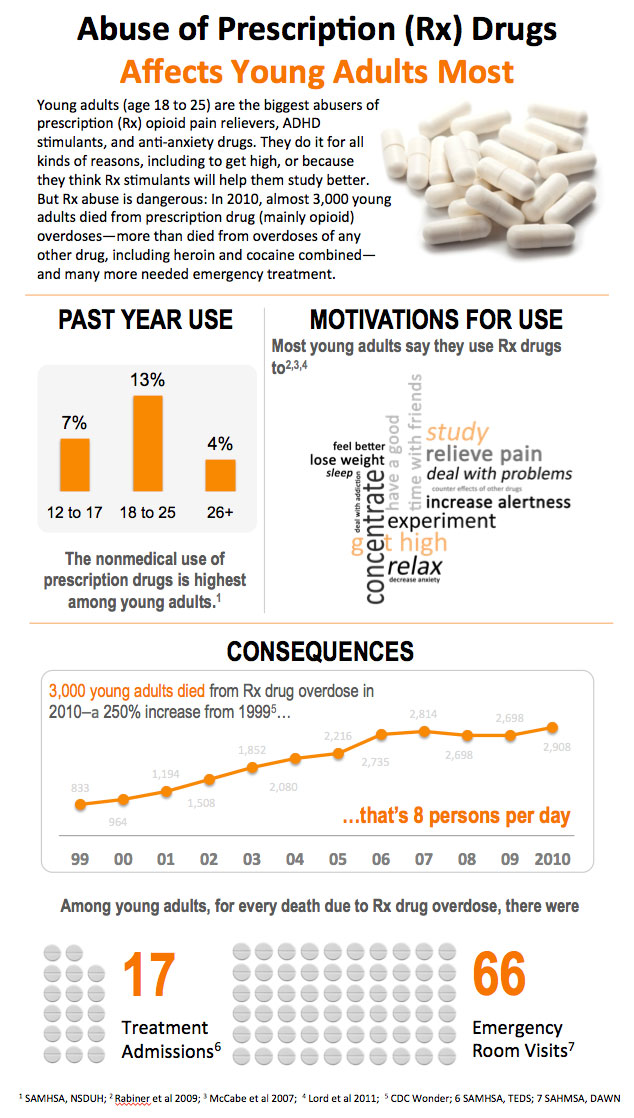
Abuse of Prescription (Rx) Drugs Affects Young Adults Most

Text Description of Infographic

Young adults (age 18 to 25) are the biggest abusers of prescription (Rx) opioid pain relievers, ADHD stimulants, and anti-anxiety drugs. They do it for all kinds of reasons, including to get high, or because they think Rx stimulants will help them study better. But Rx abuse is dangerous: In 2010, almost 3,000 young adults died from prescription drug (mainly opioid) overdoses—more than died from overdoses of any other drug, including heroin and cocaine combined—and many more needed emergency treatment.

Top Graph: The nonmedical use of prescription drugs is highest among young adults. Past year nonmedical use of prescription drugs is shown on a bar chart by age group. Seven percent of 12- to 17- year-olds, 13 percent of 18- to 25- year-olds, and 4 percent of persons age 26 or older, used prescription drugs nonmedically in the past year.

Middle Graph: Three thousand young adults died from Rx drug overdose in 2010–a 250% increase from 1999, that’s 8 persons per day. A line graph shows prescription-drug-related overdose deaths increasing among persons ages 18- to 25- years-old from 833 deaths in 1999 to 2,908 deaths in 2010.

Bottom Figure: Among young adults, for every death due to Rx drug overdose, there were 17 treatment admissions6 and 66 emergency room visits7.

Resources

1. SAMHSA, NSDUH; 2. Rabiner et al 2009; 3. McCabe et al 2007; 4. Lord et al 2011; 5. CDC Wonder; 6. SAMHSA, TEDS; 7. SAHMSA, DAWN